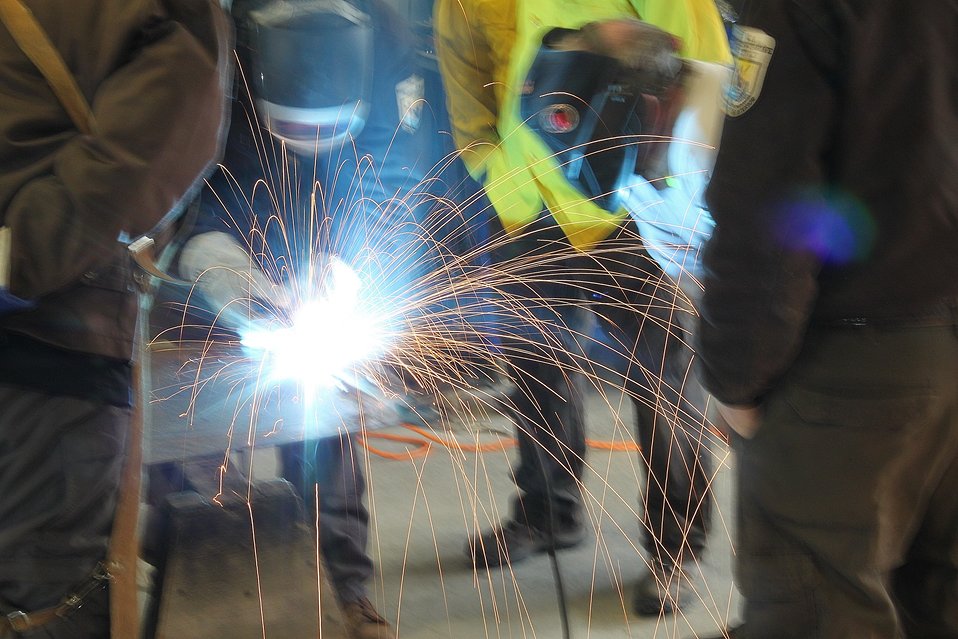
Joe Bertrand teaches welding

Joe Bertrand, Maintenance Mechanic at Missisquoi NWR instructs employees of the Lake Champlain Fisheries Office on the finer points of welding.